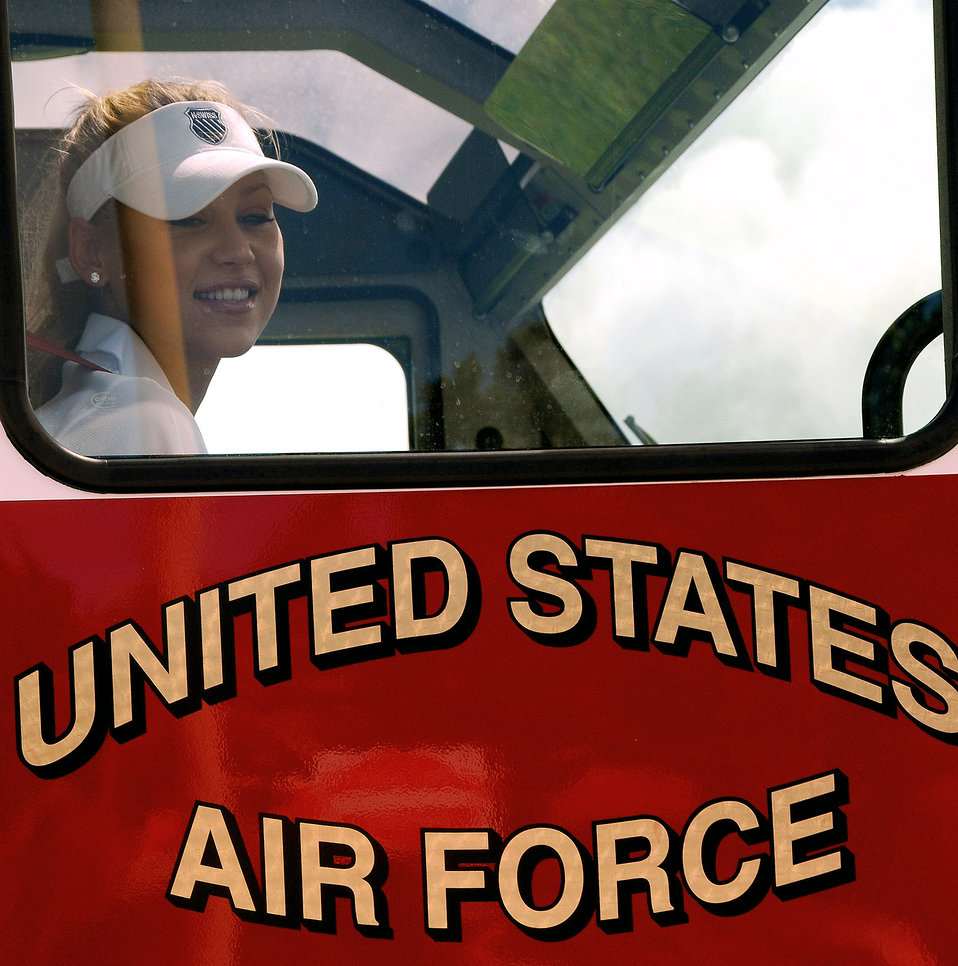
Anna Kournikova visits Andersen

Anna Kournikova receives a ride in a firetruck from the Fire and Emergency Services Flight Oct. 29 at Andersen Air Force Base, Guam. Her tour was sponsored by the USO to boost morale of the military members on Guam.